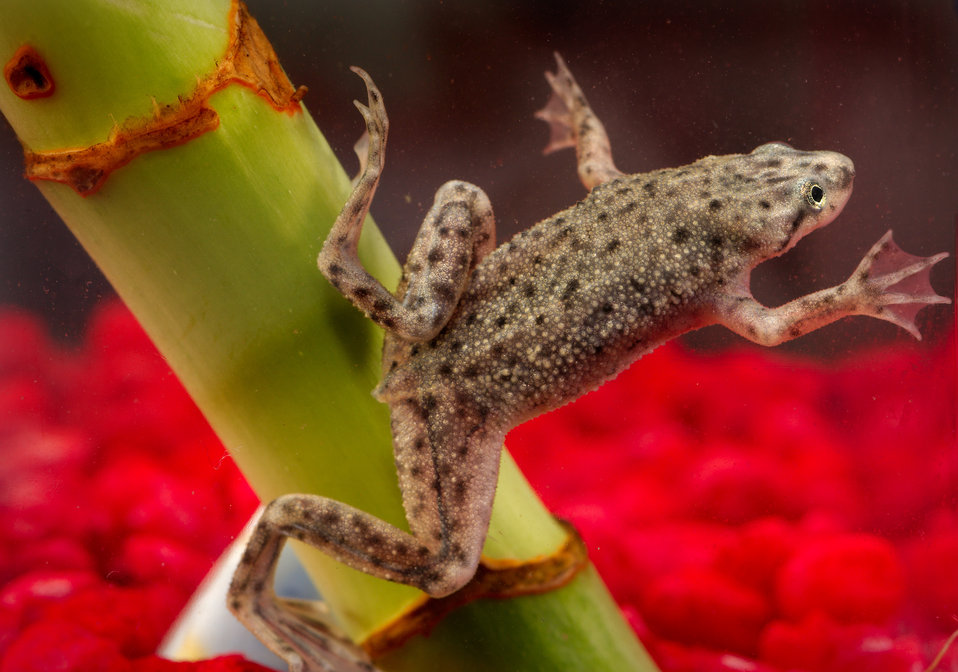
This photograph depicts an African dwarf frog, Hymenochirus boettgeri.